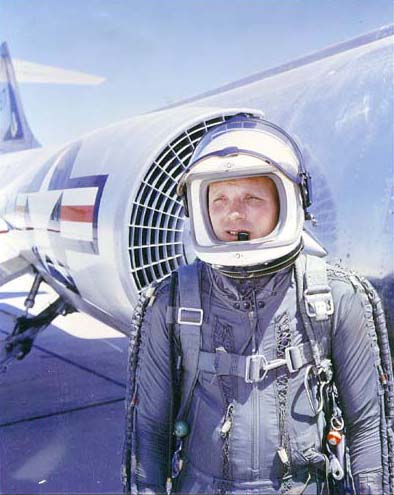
Captain Iven C. Kincheloe Jr.

1950's -- Captain Iven C. Kincheloe Jr. stands next to an F-104. Kincheloe, the personification of the